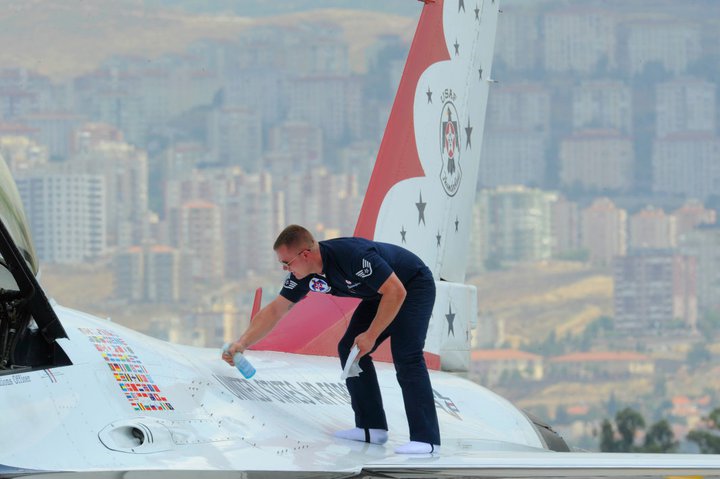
Thunderbirds open European tour in Turkey

Staff Sgt. Randy Hassenplug, assistant crew chief for Thunderbird No. 7, cleans his jet June 2, 2011, before the Thunderbirds' practice demonstration at Ciigli Air Base, Turkey.